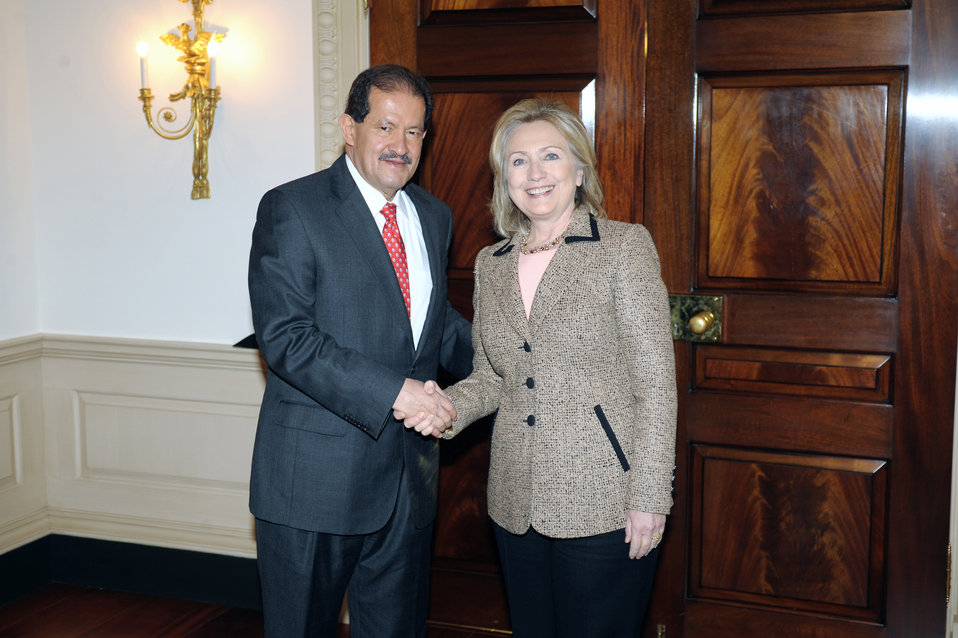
Secretary Clinton and Colombian Vice President Garzon Shake Hands

U.S. Secretary of State Hillary Rodham Clinton and Colombian Vice President Angelino Garzon shake hands before their bilateral meeting at the U.S. Department of State in Washington, D.C., on January 28, 2011.